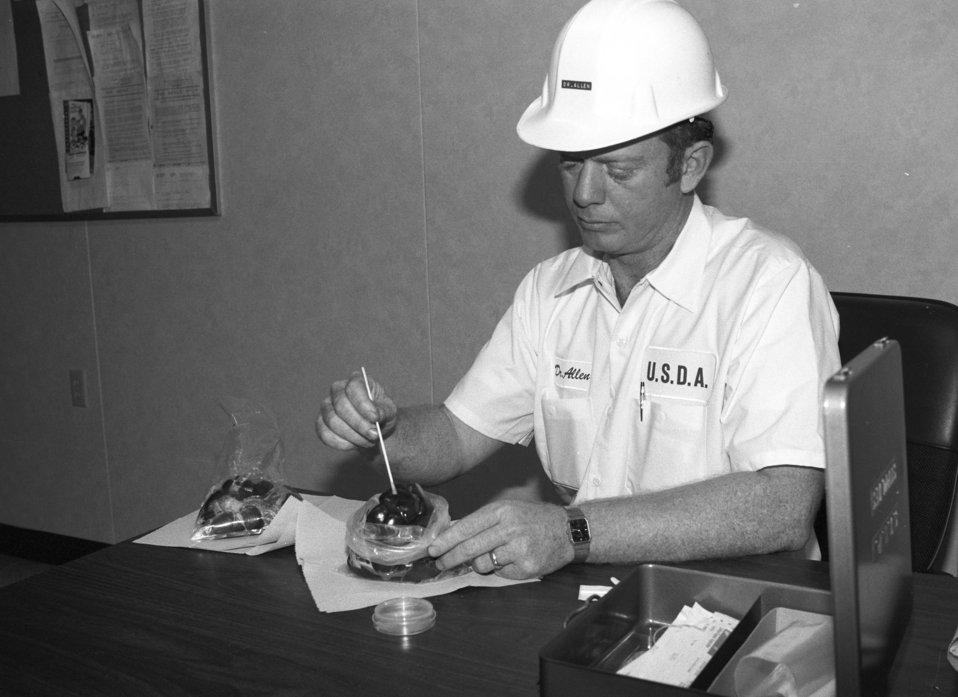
U.S. Department of Agriculture (USDA) Food Safety Inspection Service (FSIS) inspectors inspect beef using a Streamline Inspection System (SIS) at a processing plant in Plainview, TX on January 22, 1991.